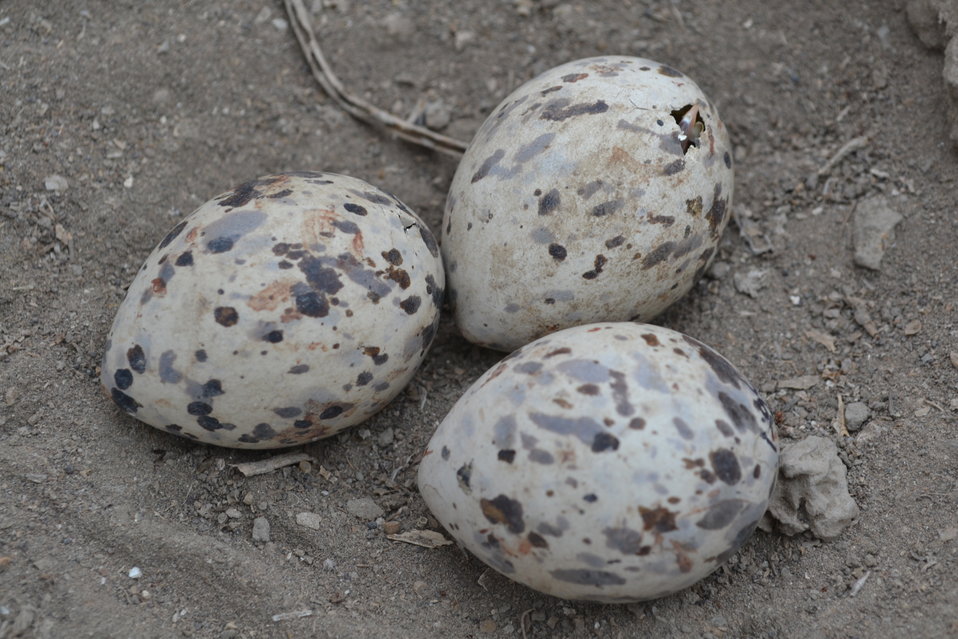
Black skimmer (Rynchops niger) chicks pipping in eggs